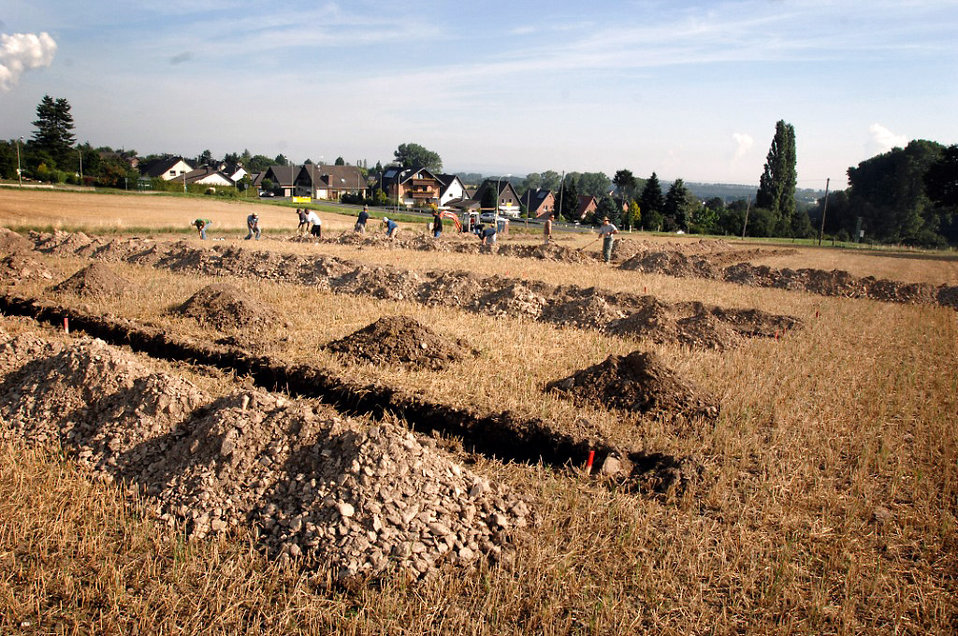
JPAC teams serve on front lines of recoveries

Test trenches are dug into a wheat field outside of Strass village in Germany. The Joint POW/MIA Accounting Command recovery team was there last month to recover the remains of a missing World War II fighter pilot.